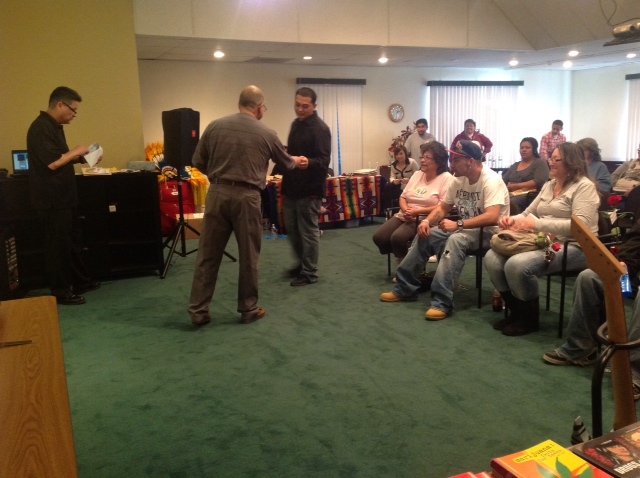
HIKE's National Drug Facts Week 2013

Lakewood, Co. Shatter The Myths Event- February 2, 2013. Speakers included Mita Johnson President of Colorado Association of Addiction Professionals and CEO Behavioral Health Resources, LLC, Thea Wessel with Women's Rise Re-Entry Clinician at Denver County Jail, Marguerite Ham from Eye of the Storm Foundation, and Francisco Cordova and Lakewood CO. Councilman Pete Roybal. Photos provided by Justine Hurtado